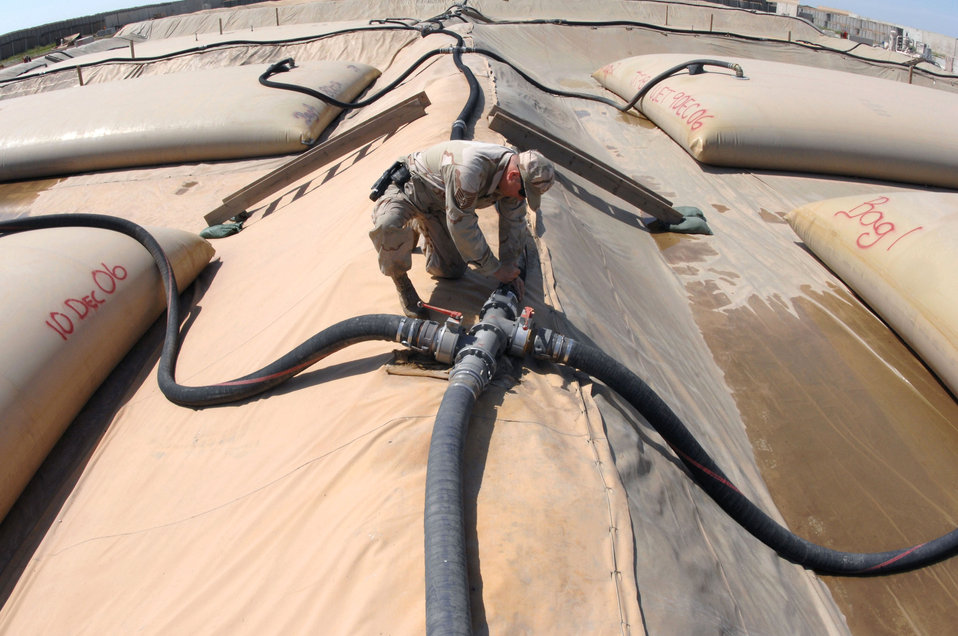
Keepin' the fuel flowin' in Kirkuk

Tech. Sgt. Adam Giles closes a block valve to a 50,000-gallon JP-8 fuel bladder April 5 at Kirkuk Air Base in Iraq. Sergeant Giles is a fuels supervisor with the 506th Expeditionary Logistics Readiness Squadron.